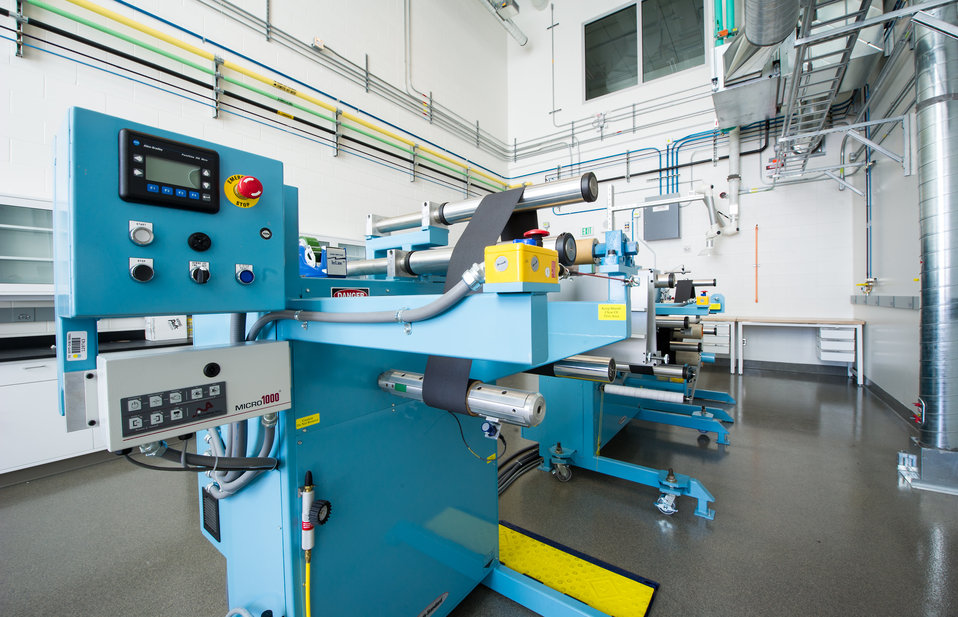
Energy Systems Integration Facility (ESIF), research web line, hydrogen lab

May 02, 2013 - The research web line in one of the hydrogen materials lab at the new Energy Systems Integration Facility (ESIF) at the National Renewable Energy Laboratory in Golden, Colorado.